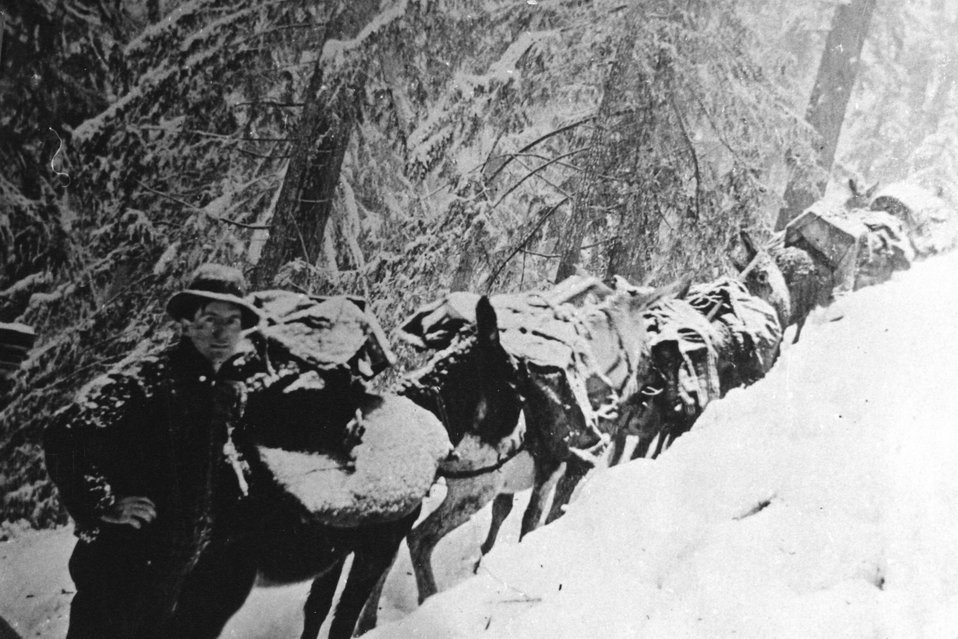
Winter Packing on the Rogue River Trail.